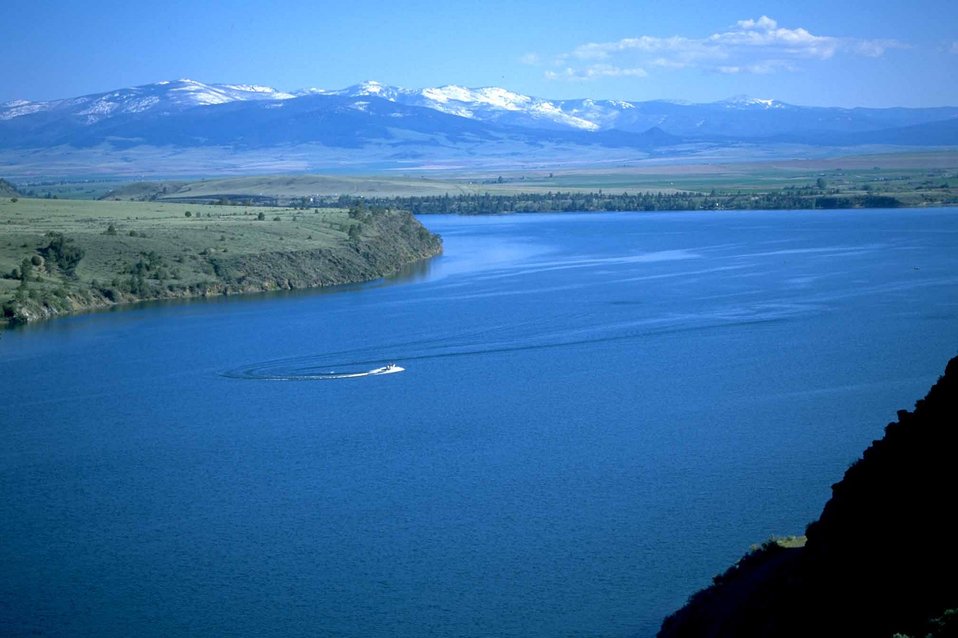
Scenic view of snow-capped mountains, green meadows and Lake Hauser